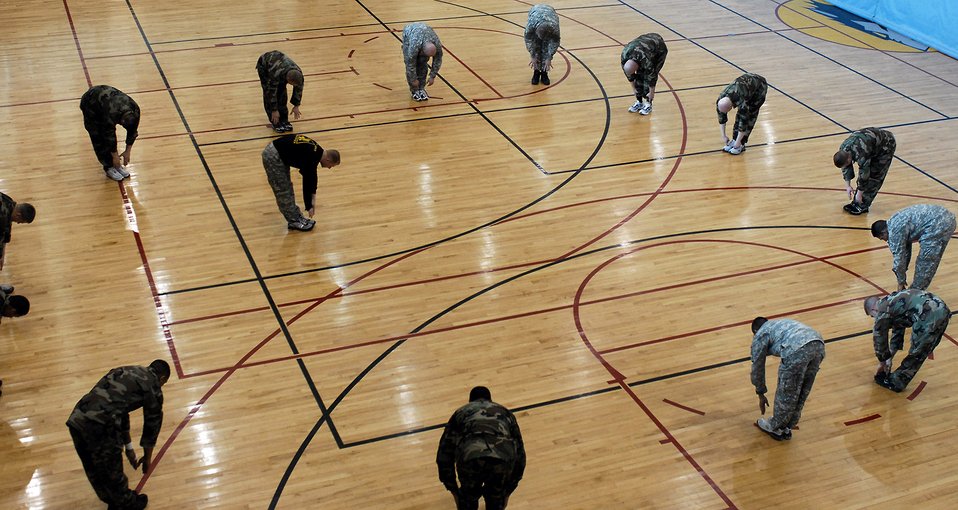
Airmen, Soldiers fight

Airmen and Soldiers go through stretching exercises before entering a hand-to-hand combat tournament Feb. 14 at Kunsan Air Base, South Korea. This training is part of the Army warrior ethos. The training is now offered to Airmen here to enhance mission effectiveness between the two services. Air Force officials are currently working on a service specific hand-to-hand combat training for all Airmen. Currently, the Air Force's Officer Training School has implemented a new close-combat course into its curriculum.